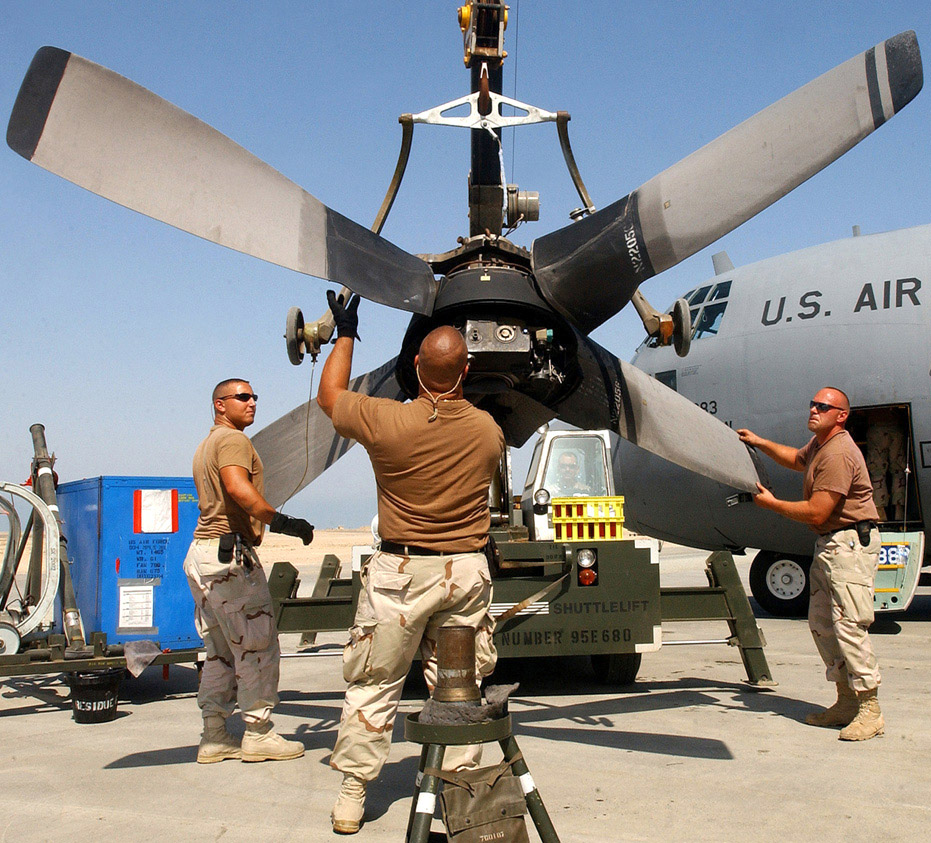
Giving Hercules props

OPERATION IRAQI FREEDOM -- 321st Expeditionary Maintenance Squadron airmen secure a propeller prior to installing it on a C-130H Hercules.